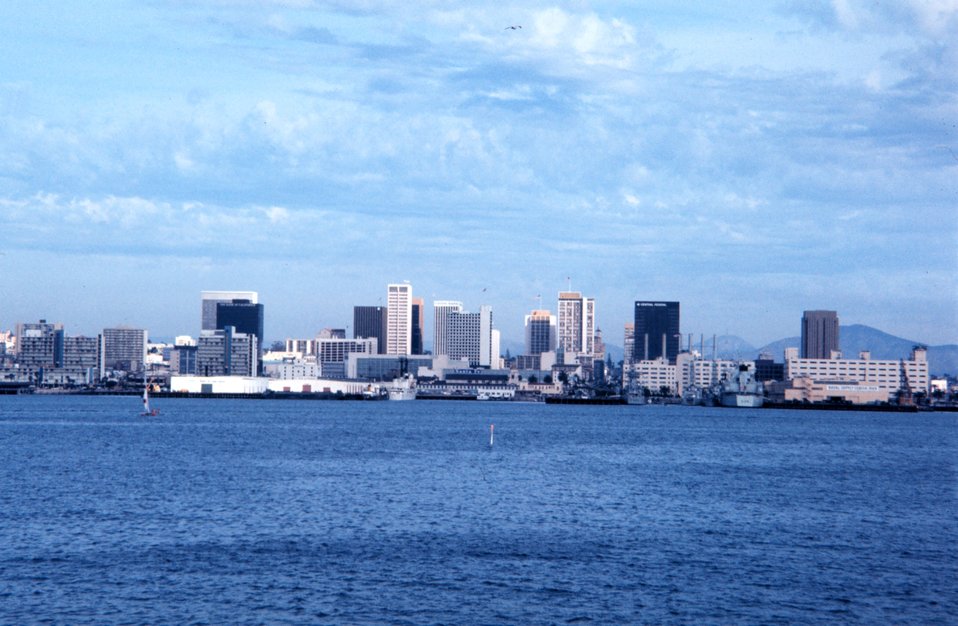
View of a naval facility. San Diego before changing skyline with new construction.